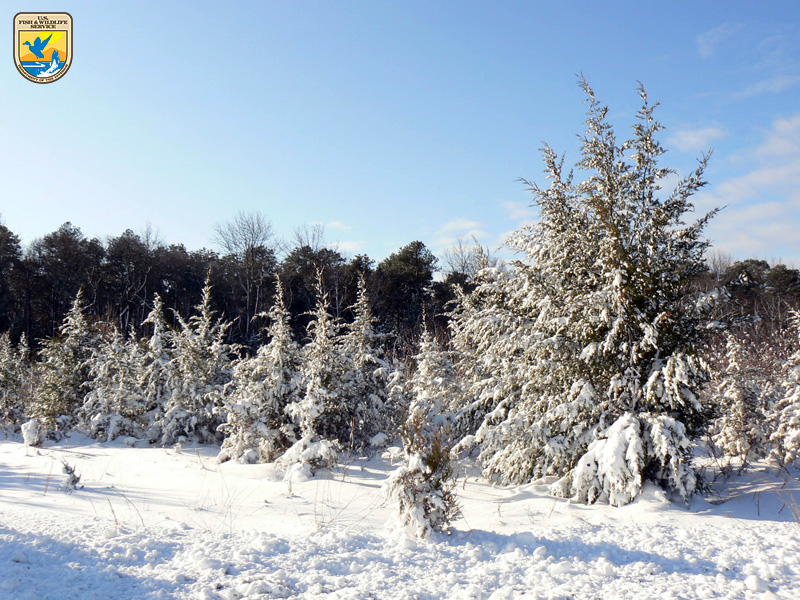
Snow covered pines